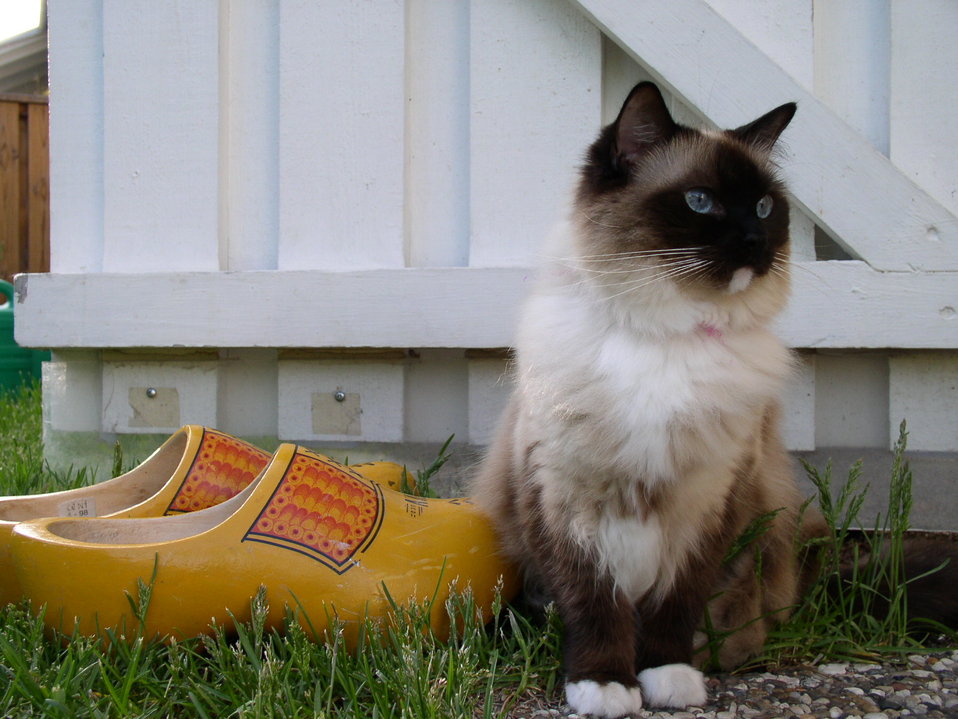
Ragdoll, seal mitted